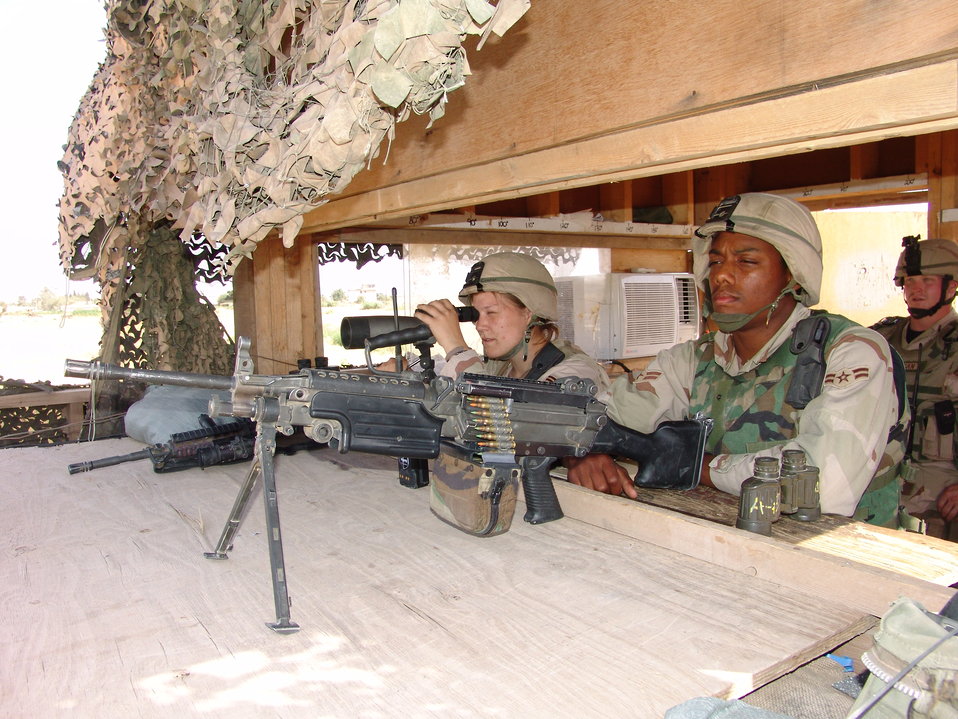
Airmen keep deployed base safe

KIRKUK AIR BASE, Iraq -- Senior Airman Stacey Cooper and Airman 1st Class Jason Braswell keep an eye out for suspicious activity from a tower here. They are assigned to the 506th Expeditionary Security Forces Squadron.